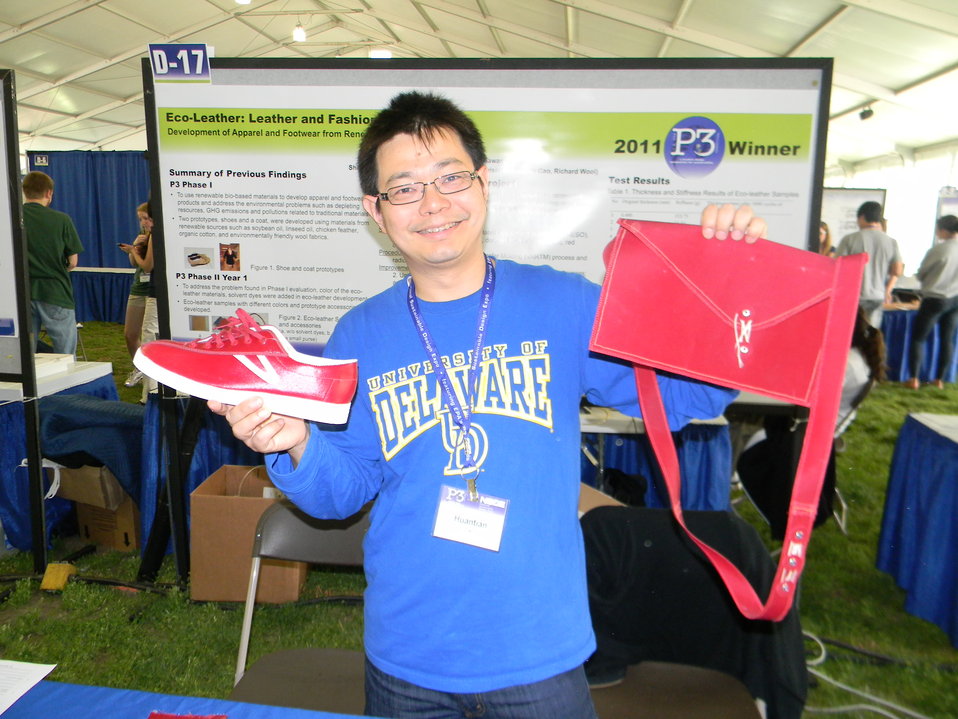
April 19, 2013 - P3 Design Expo, Delaware Phase 2

A 2011 P3 winner from Delaware University, designed new material for shoe construction.

People Prosperity and the Planet: National Sustainable Design Expo on the National Mall 18-19 April 2013